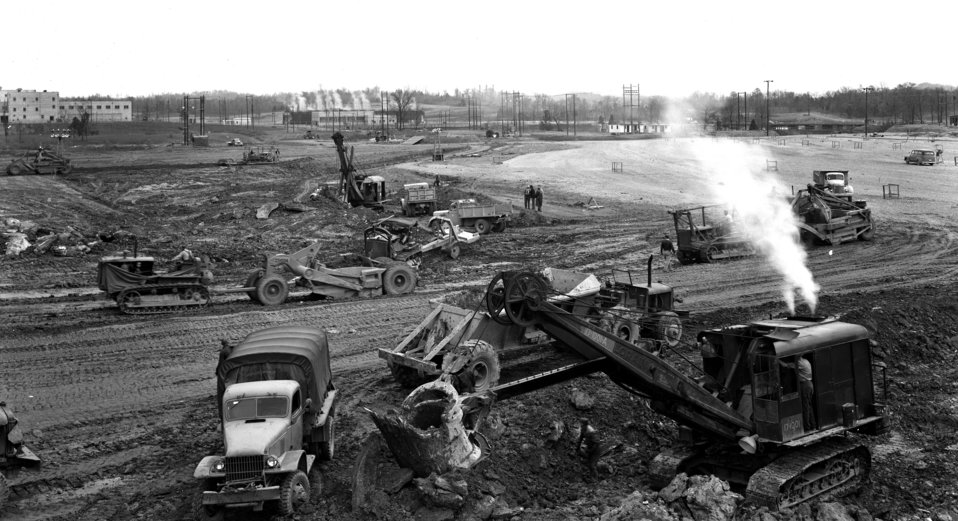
K-31 Contruction Project Oak Ridge 1950

5891 DOE photo Ed Westcott 5-24-1950 Oak Ridge Tennessee